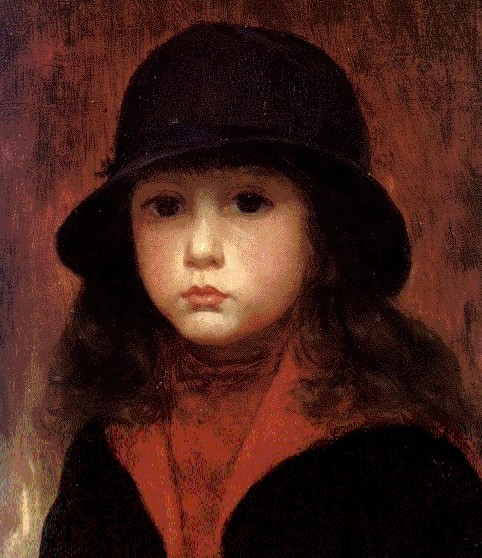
Español: Hijo del pintor